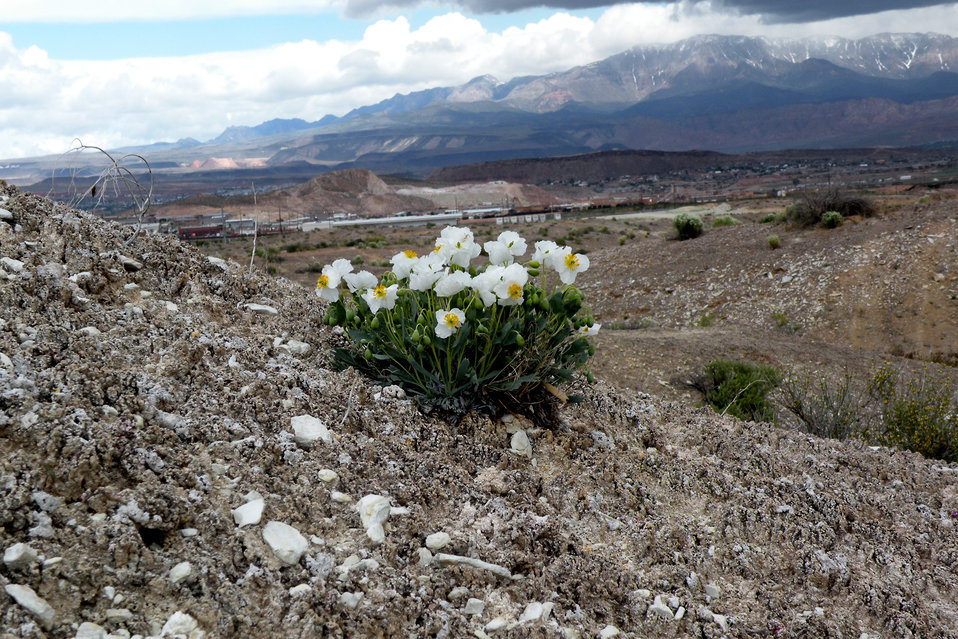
Dwarf bearclaw poppy (Arctomecon humilis)

The dwarf bearclaw poppy is endemic to Washington County, UT. The species occurs on rolling hills and bluffs in sparsely-vegetated desert shrub communities between 2,700 ft. and 3,330 ft. in elevation. It is listed endangered